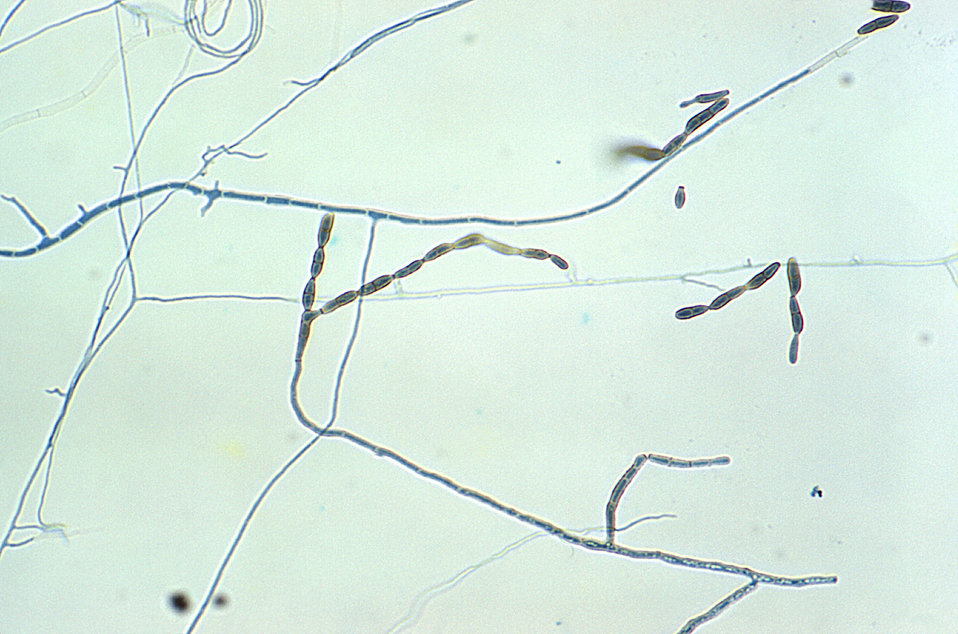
Magnified 400X, this slide culture photomicrograph highlighted some of the ultrastructural morphology exhibited by numbers of Bispora betulina, also known as Dicoccum betulinum, fungal organisms.